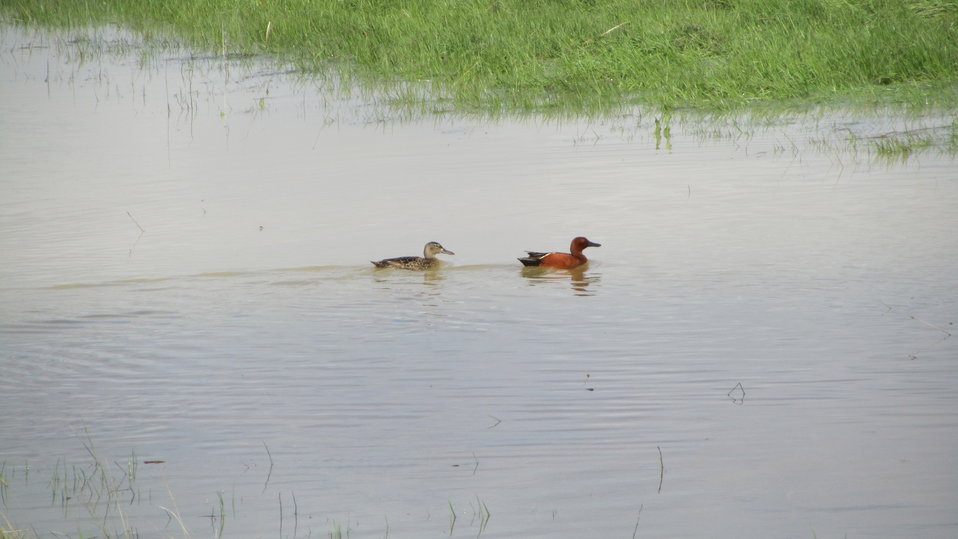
Cinnamon Teal Hen and Drake

The lands of the refuge were established to protect and provide habitat for migratory birds that cross State lines and international borders and are by law a Federal trust responsibility.
The refuge is of great value to waterfowl and shorebirds, as well as other migrating water-dependent bird species, because of the diversity of wetland and upland habitats that provide for the diverse life cycle needs of these species.